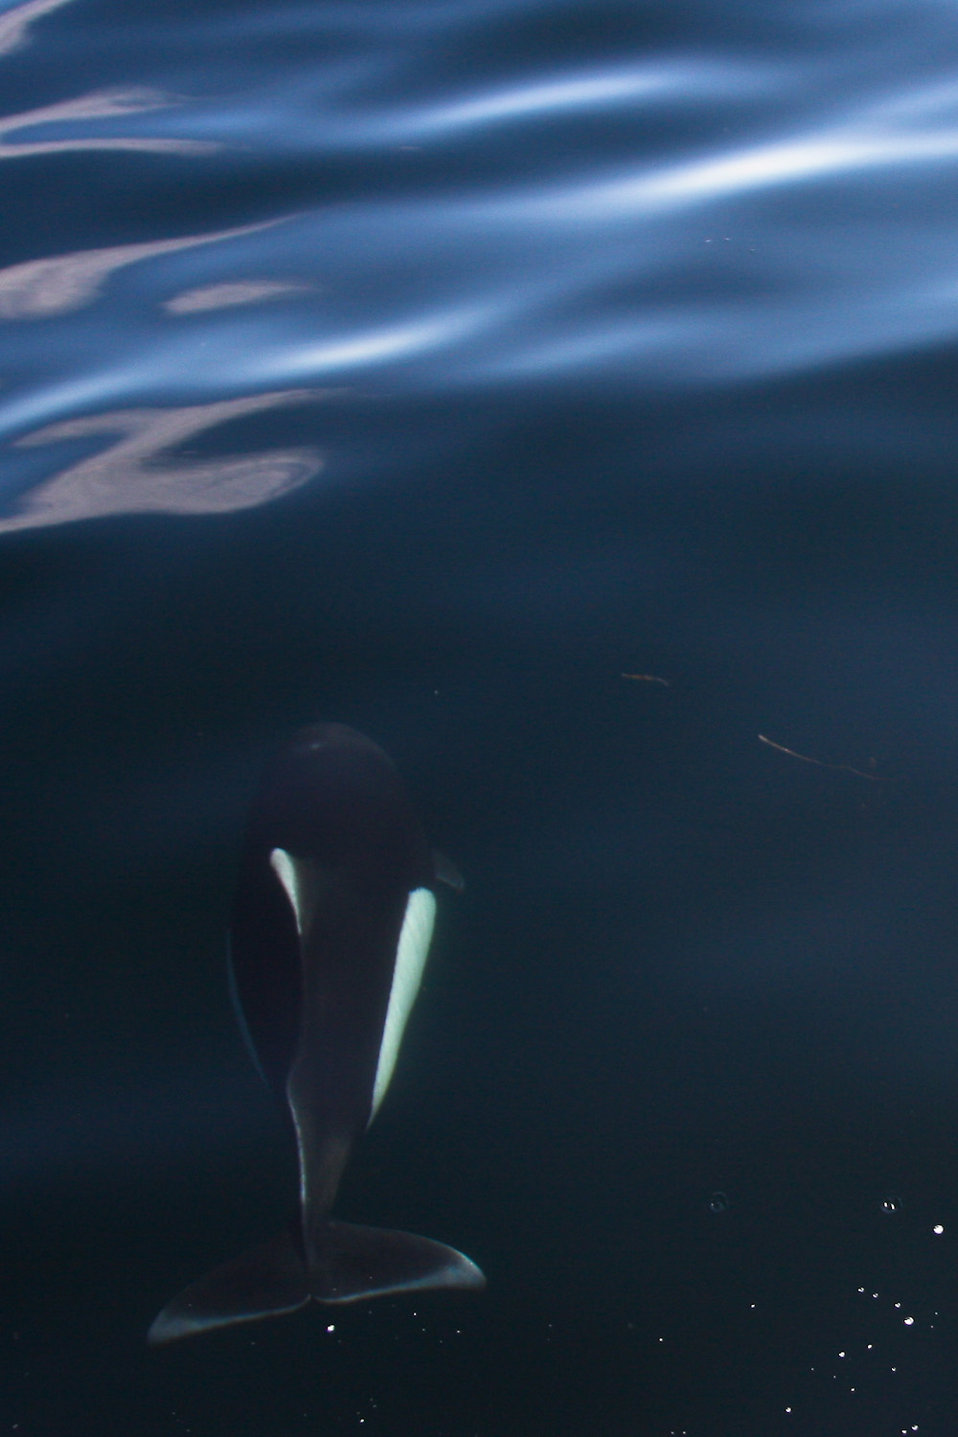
Dall's Porpoise

Lisa Hupp/USFWS